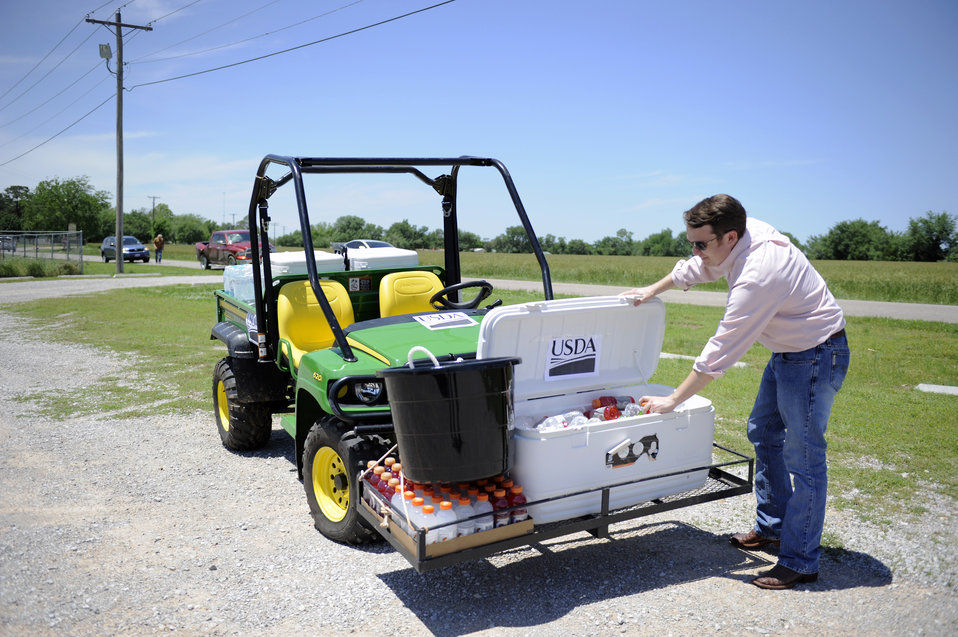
U.S Department of Agriculture (USDA) Rural Development (RD) Oklahoma State Director Ryan McMullen is ready to distribute refreshments to tornado victims, volunteers, and responders.